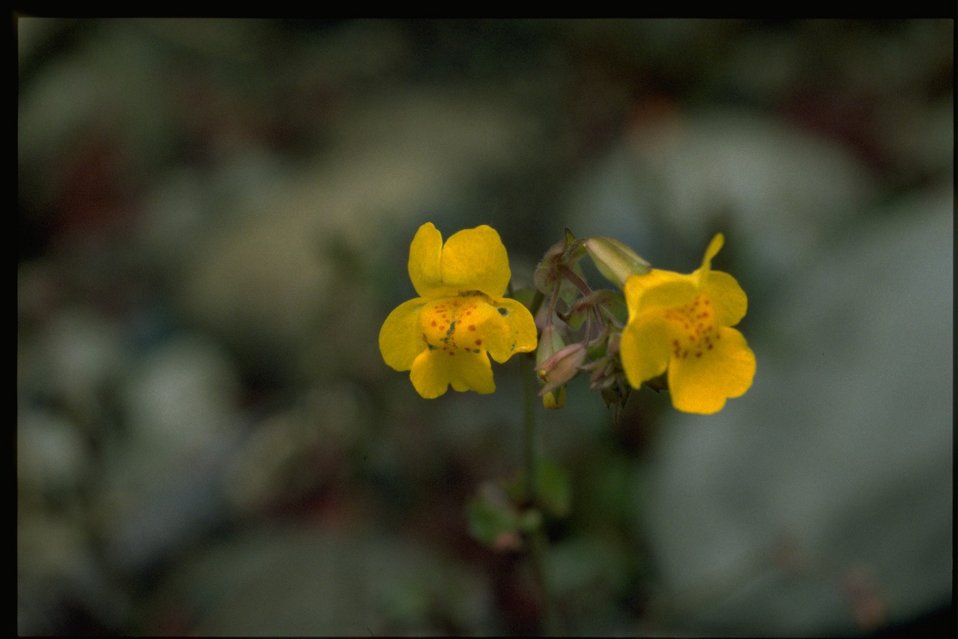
Closeup shot of Mimulus guttatus.